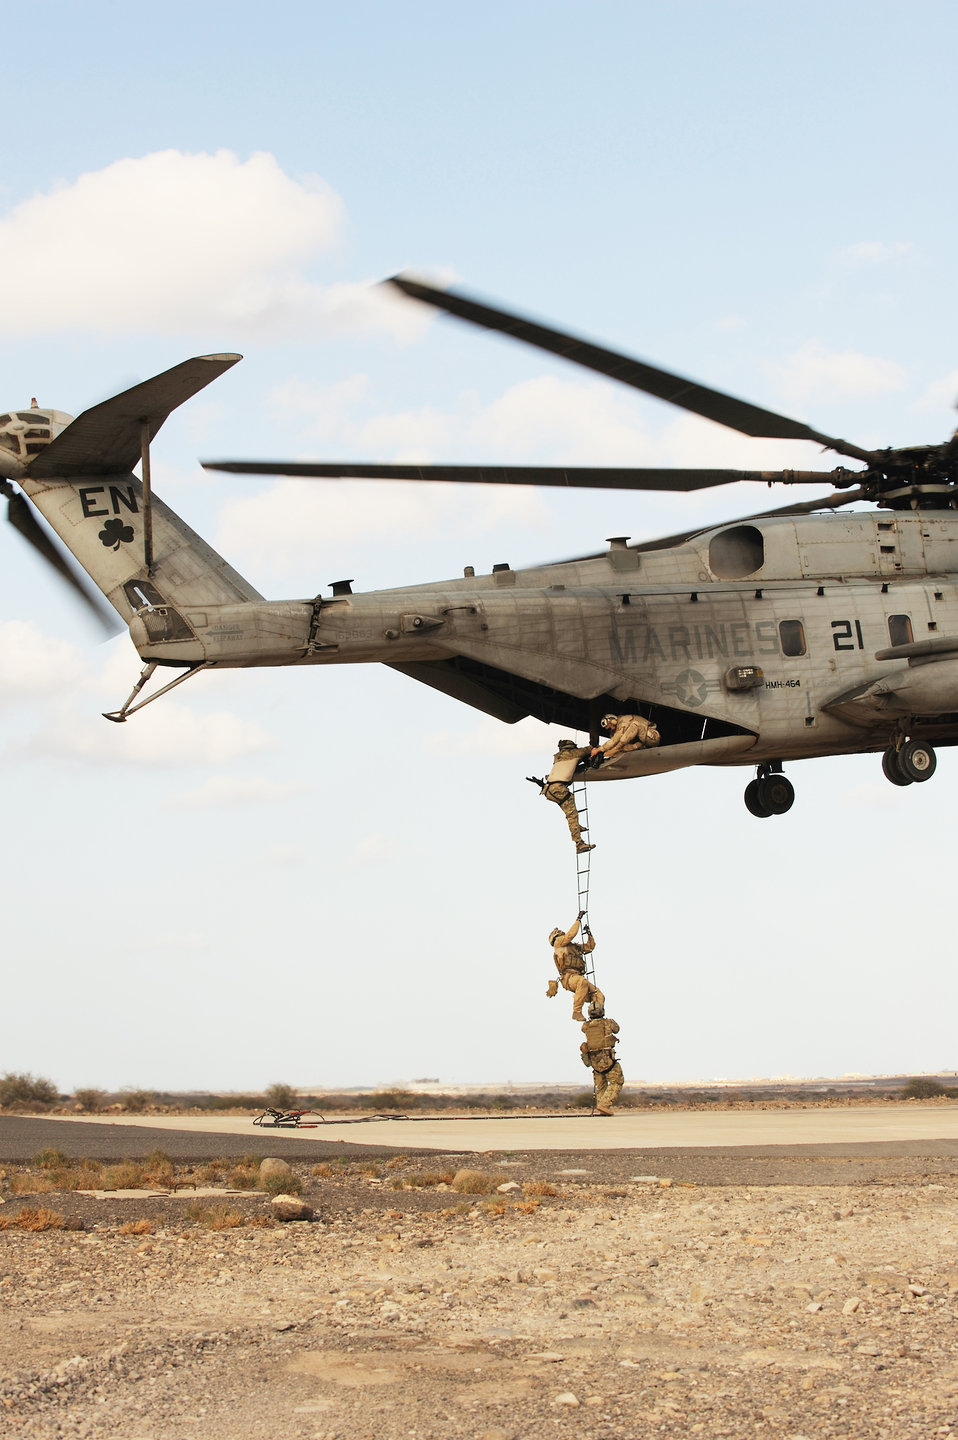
Pararescuemen hone skills in Africa

Air Force pararescuemen conduct a combat insertion and extraction exercise from a Marine CH-53 Sea Stallion helicopter in Djibouti, Africa, Jan. 5, 2010. The helicopter is attached to Heavy Marine Helicopter Squadron 464, and the two units are deployed to Combined Joint Task Force-Horn of Africa.